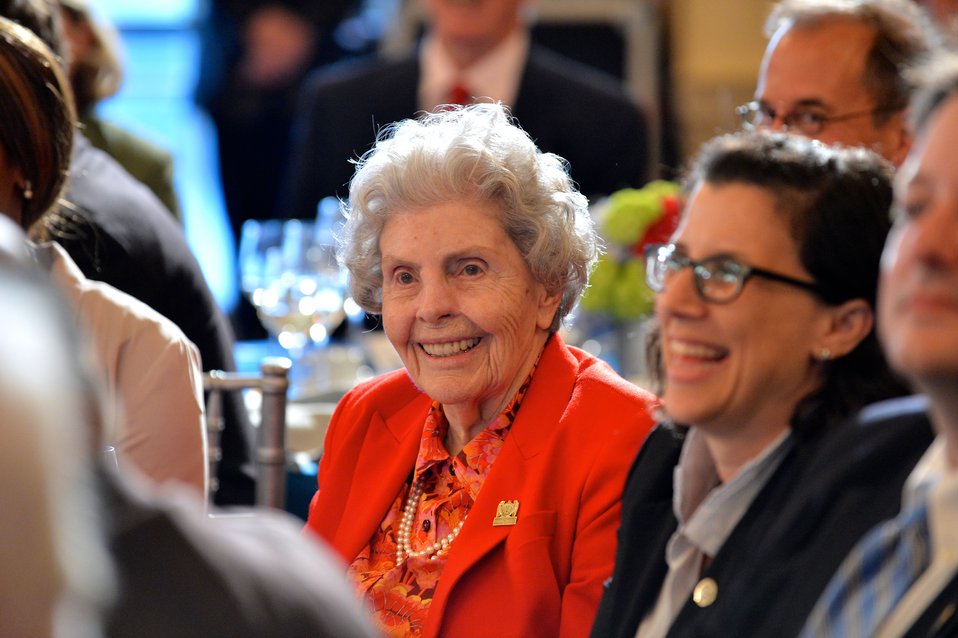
Ambassador Clark Celebrates the 90th Anniversary of the U.S. Foreign Service

Ambassador Joan Clark, a former Director General of the Foreign Service who received the American Foreign Service Association Lifetime Contributions to American Diplomacy Award in 2007, attends an event, hosted by U.S. Secretary of State John Kerry, celebrating the 90th Anniversary of the United States Foreign Service at the U.S. Department of State in Washington, D.C., on May 22, 2014. The modern Foreign Service was created on May 24, 1924, with the passage of the Rogers Act establishing the current merit-based, professional Foreign Service.